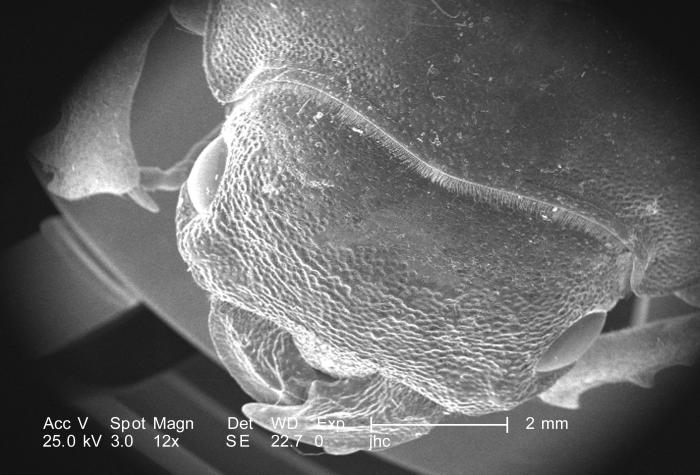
At a very low magnification of 12X, this scanning electron micrograph (SEM) focused on the head region of an adult 'figeater' beetle, Cotinis mutabilis. Note the two laterally-positioned eyes, as well as the insect's overlapping mandibles. For successively greater magnifications of this region with its exoskeletal features PHIL 9954, 9955, 9956, 9957 and 9958.